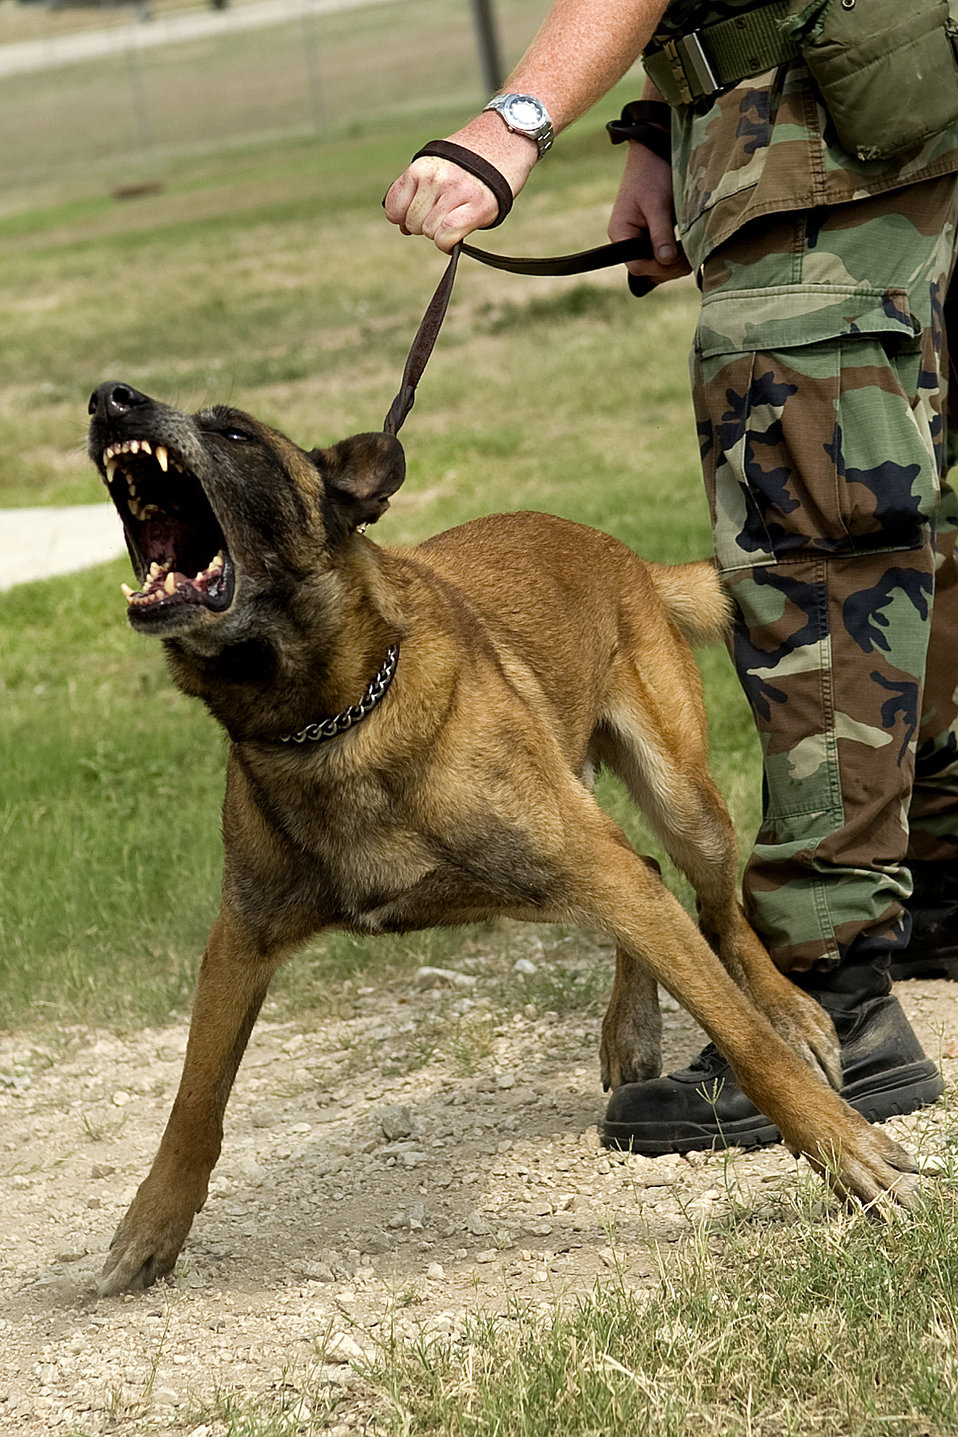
Training for military working dogs

Petty Officer 3rd Class Andrew Barnhart restrains his working dog during a training session at the working dog training grounds on Lackland Air Force Base, Texas. Military working dogs are enrolled in a 60- to 90-day training program where they are taught to detect explosives and drugs. They are also taught deterrence training and how to protect their handler.